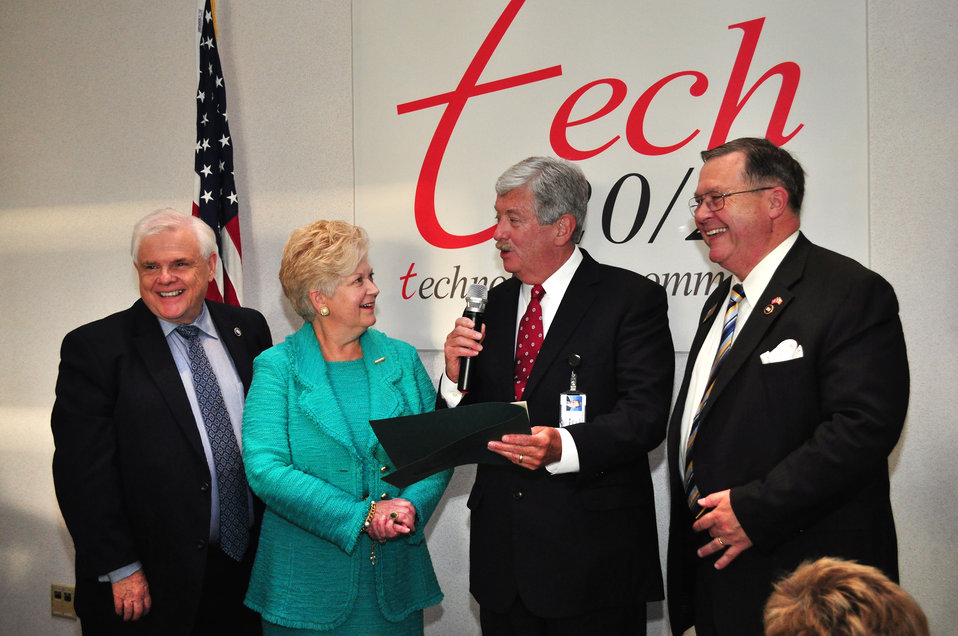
Tennessee Valley Corridor Summit Oak Ridge

13-062 DOE photo Lynn Freeny 5-29-2013 Oak Ridge Tennessee